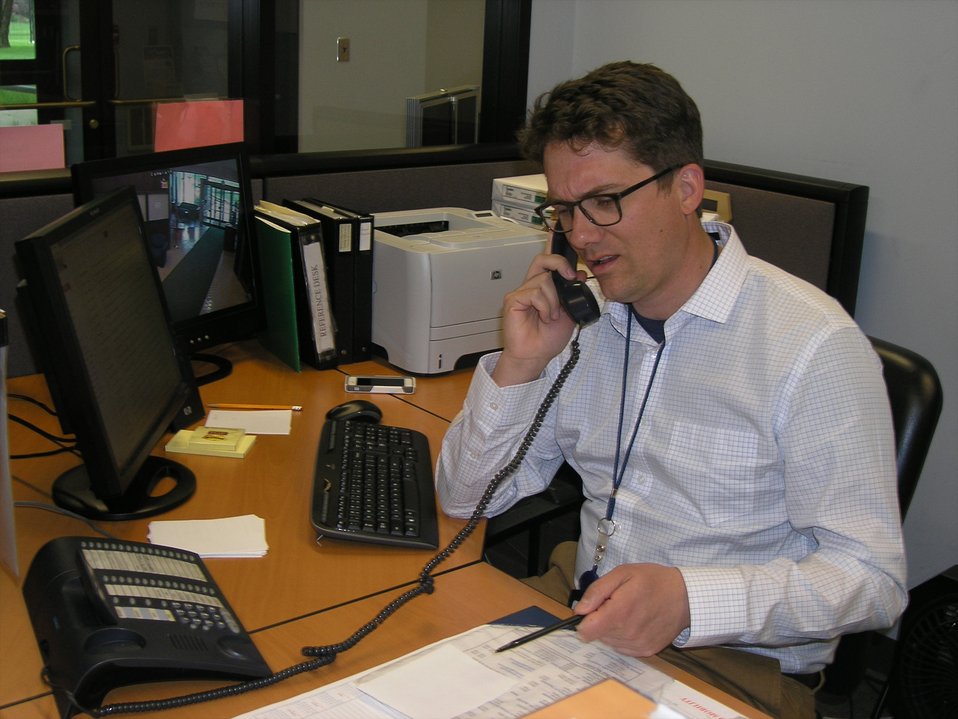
Jeremy Farmer answering the telephone in the Archives Reading Room; Location: National Archives at Chicago, Chicago, IL